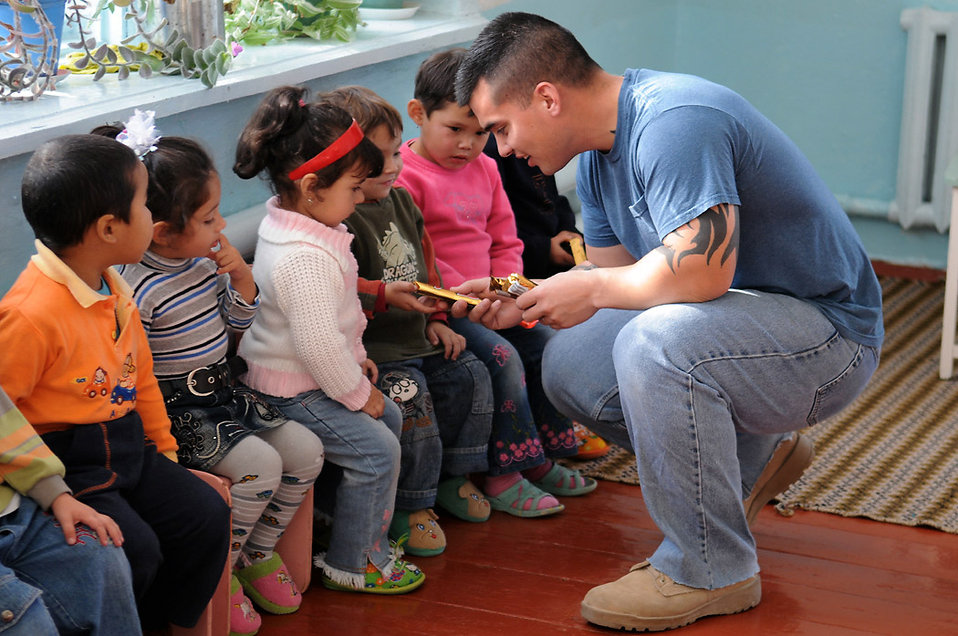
The spirit of the season: giving

Staff Sgt. Brandon Arenibar hands out candy bars to the children at Vasilievika Elementary School Oct. 7 near Manas Air Base, Kyrgyzstan. Members of the 376th Air Expeditionary Wing Staff and Operations Group have supported the school since 2004, pulling together donations, pooling skills such as painting and carpentry and just spending time with the kids. Sergeant Arenibar is assigned to the 376th Expeditionary Operations Group.